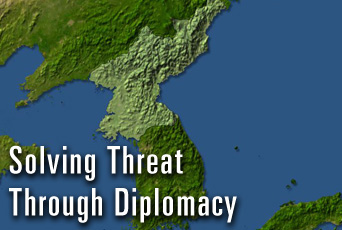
Solving Threat Through Diplomacy